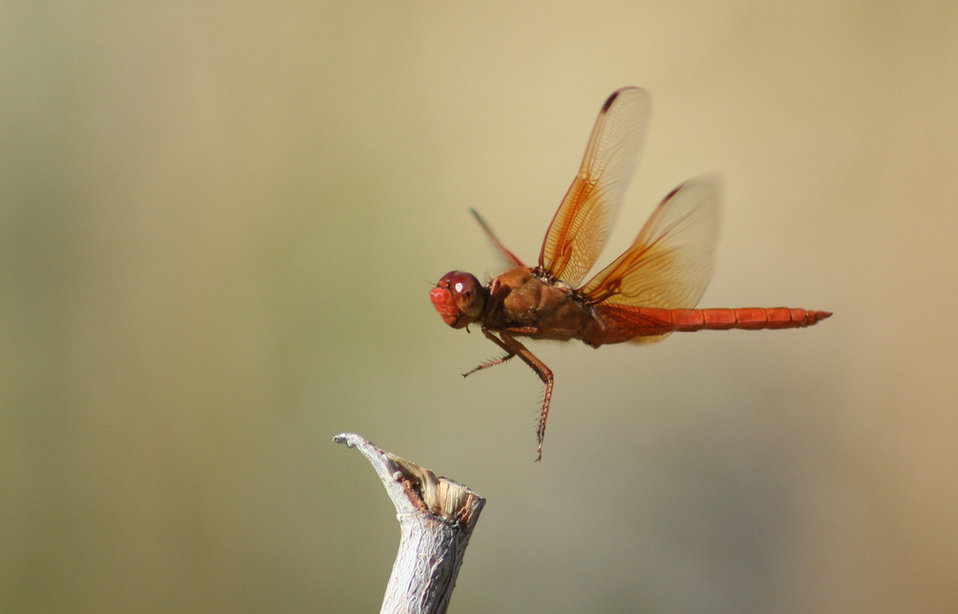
Flame skimmer dragonfly at Ash Meadows National Wildlife Refuge, NV. One of the most conspicuous of the refuge's dragonflies.